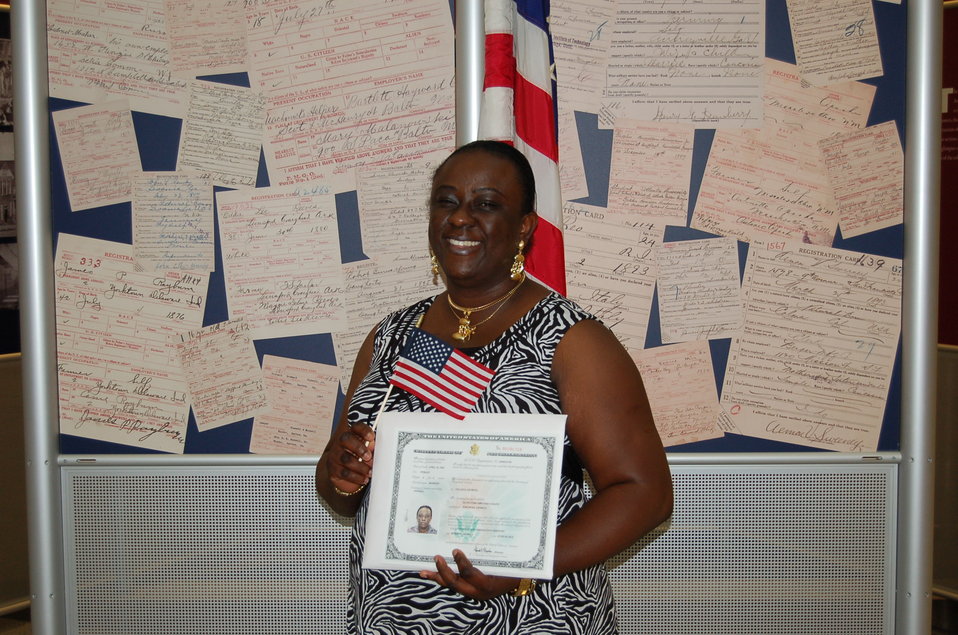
New Citizens